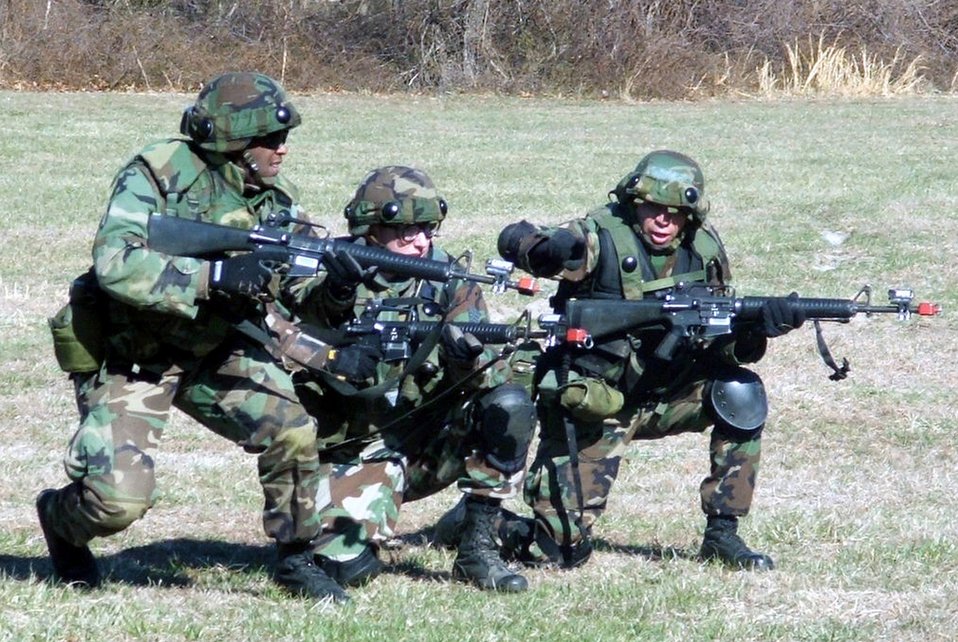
Contingency skills training

Airmen practice combat tactics and squad patrolling maneuvers during training at Fort Dix, N.J., on Monday, March 27, 2006. More than 140 Airmen are participating in the Air Force Integrated Contingency Skills Training Course 06-3, which includes combat tactics and convoy operations.